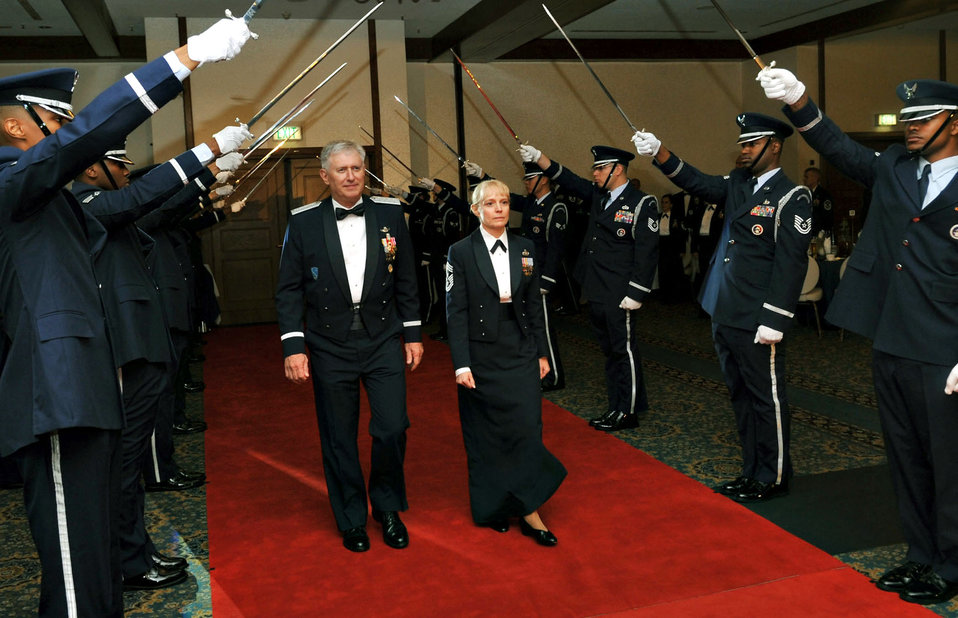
Airmen bestow highest enlisted honor

Gen. Roger A. Brady and Chief Master Sgt. Pamela Derrow pass under the Arch of Sabers during an Order of the Sword ceremony Sept. 8, 2010, at Ramstein Air Base, Germany. As the 19th recipient of USAFE's Order of the Sword, General Brady was given the highest honor someone can receive from the Air Force's enlisted corps. General Brady is the U.S. Air Forces in Europe commander. Chief Derrow is the USAFE command chief.